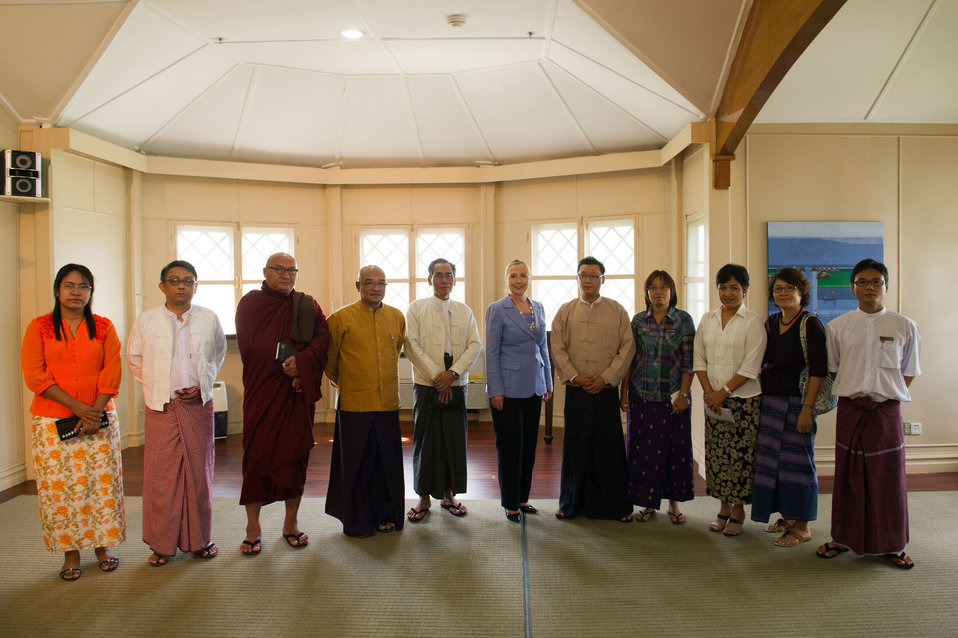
Secretary Clinton Meets With Burmese Civil Society Representatives

U.S. Secretary of State Hillary Rodham Clinton meets with representatives of civil society groups in Rangoon, Burma, on December 2, 2011.